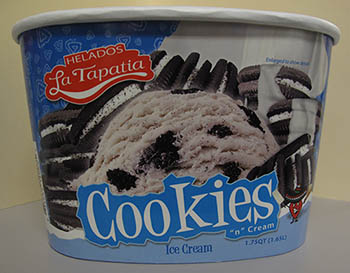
RECALLED – Ice cream products

March 19, 2014 – Product Recall – Helados La Tapatia, Inc. Recalls Products Because of Possible Health Risk.